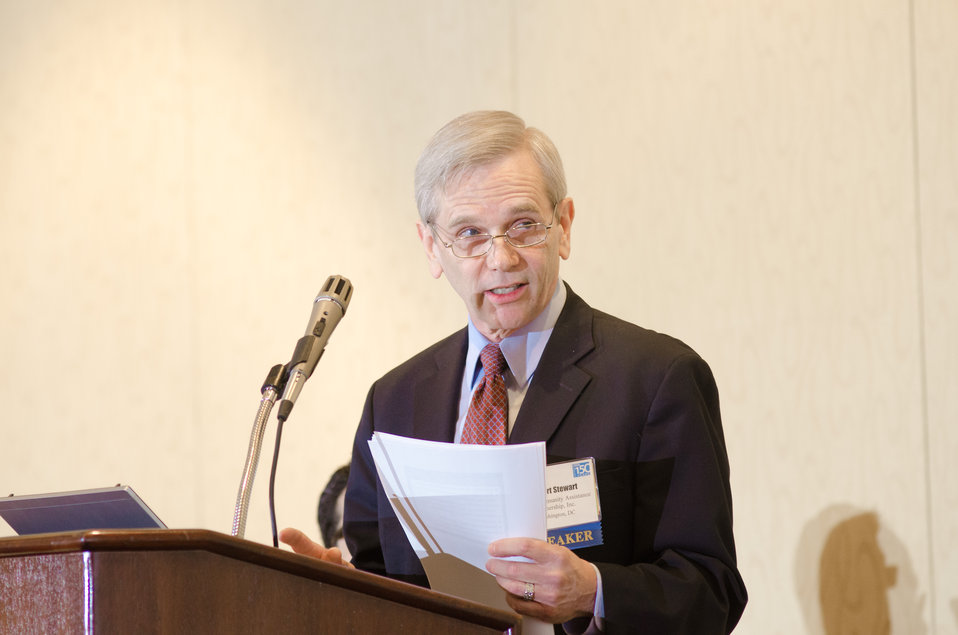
Rural Community Assistance Partnership, Inc., Executive Director Robert Stewart spoke at the Rural Development session on “Why Every American Should Care About the Future of Rural Water,” at the 2012 Agricultural Outlook Forum, “Moving Agriculture Forward, Growing, Innovating and Celebrating 150 Years” held at the Crystal Gateway Marriott Hotel, Arlington, Virginia, on Friday, February 24, 2012. This year’s forum coincides with the 150th anniversary of the Department of Agriculture addressing economics, marketing, research, food safety, nutrition, conservation, rural development, alternative energy, trade and many other agricultural issues.